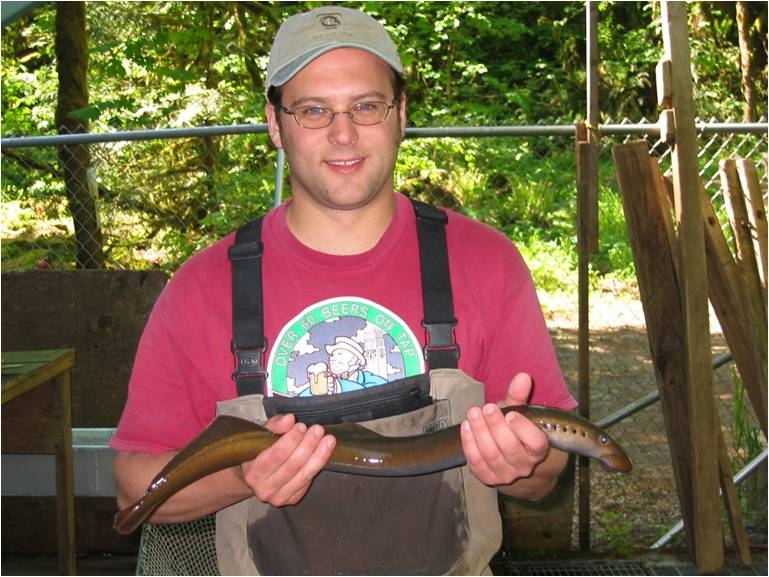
Adult lamprey

Columbia River Fisheries Program Office staff member holds an adult lamprey.